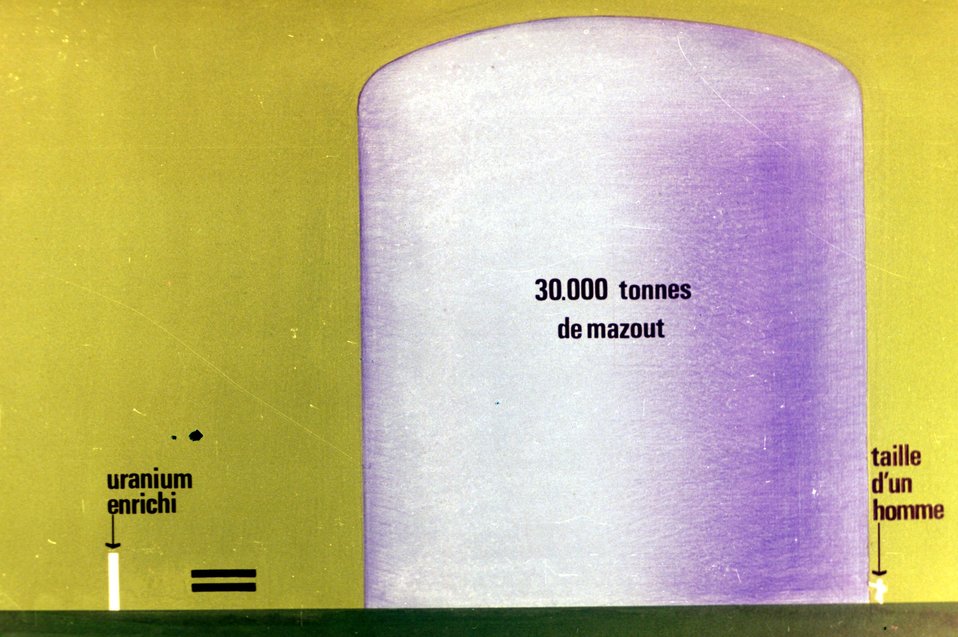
Comparaison mazout/uranium enrichi.